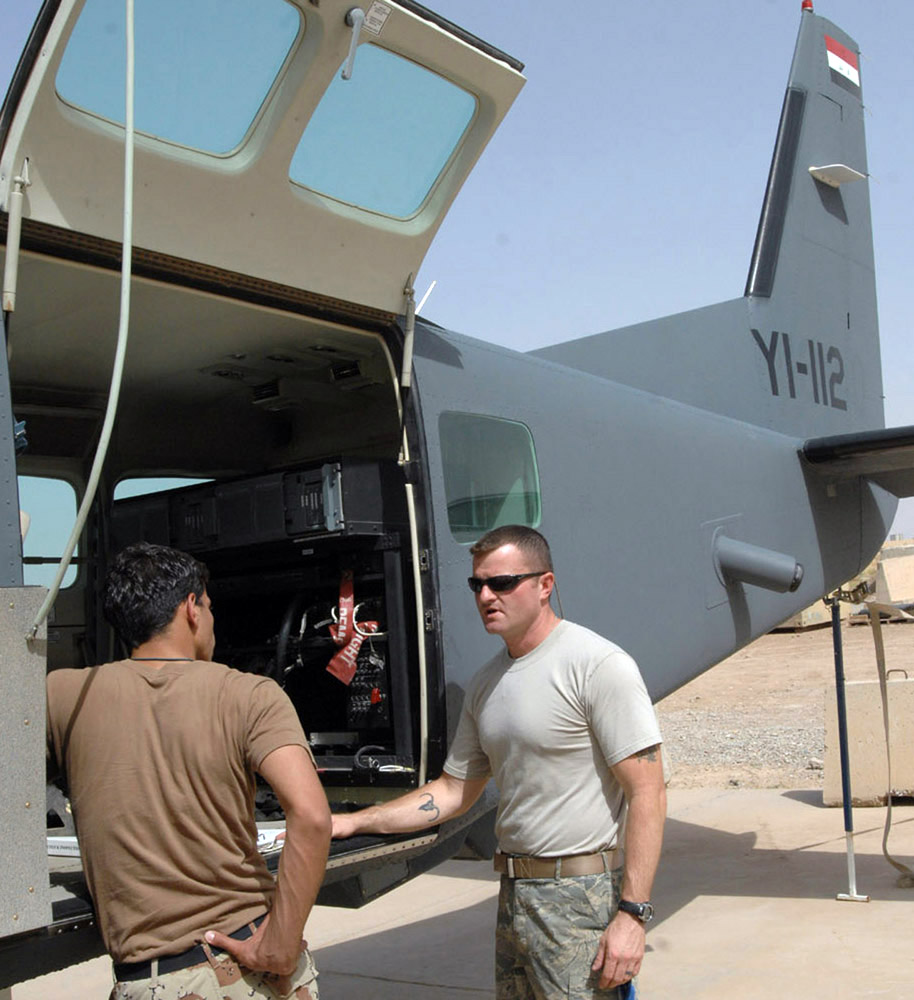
Iraqi airmen keep fleet soaring

An Iraqi airman reviews technical orders with Master Sgt. Robbie Leist June 7 at Kirkuk Air Base, Iraq. While Iraqi air force pilots continue flying sorties to aid stability in their nation, Iraqi maintainers on the ground have recently achieved important benchmarks to keep their fleet in the air. Airmen with the Iraqi air forces' 3rd Squadron took over a wide variety of maintenance duties on the unit's Cessna intelligence, surveillance and reconnaissance fleet, a task formerly performed by U.S. contractors. Sergeant Leist is with the 870th Expeditionary Air Advisory Squadron.